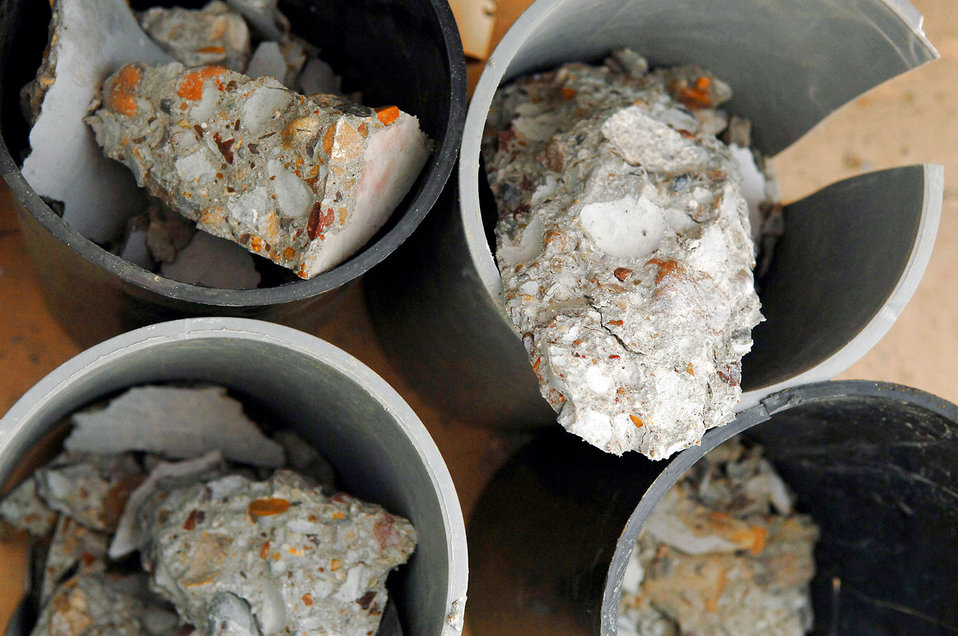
Under pressure

Pieces of broken cylinder samples, taken from the new Housing 6 area shoppette foundation, sit after being strength tested Feb. 21 at Balad Air Base, Iraq. The test, performed by engineering assistants, is vital to the safety of Airmen and aircraft every day. Without constant surveys and tests the Air Force runs the risk of allowing sub-standard materials to be used on projects that are used on a daily basis.